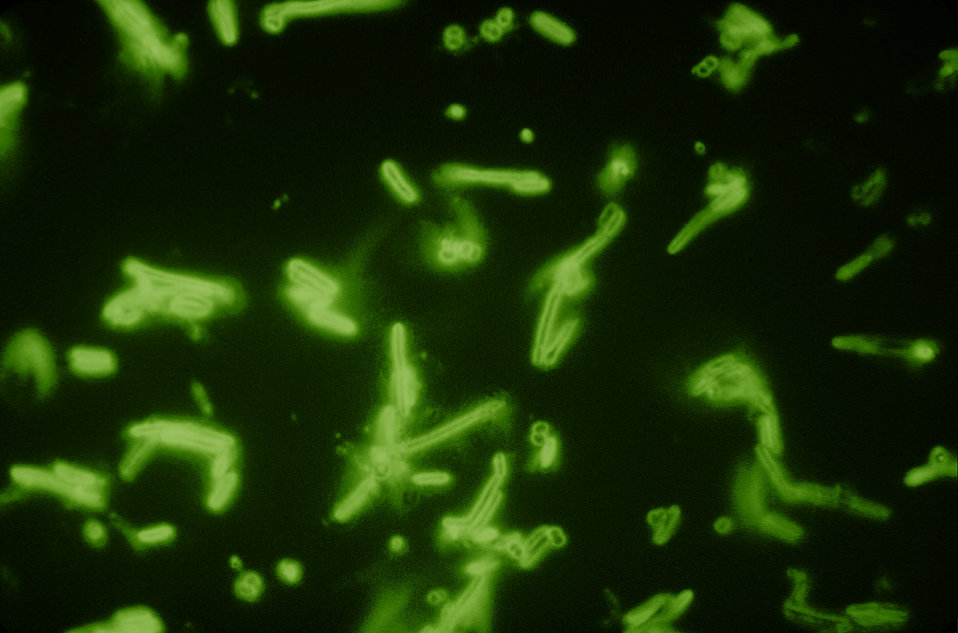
This 1959 photomicrograph depicted a mixed culture of microorganisms, which had been histochemically processed using the fluorescent antibody (FA) staining method. In the field of view, one can see both rod-shaped bacilli, and small, round-shaped cocci bacteria.